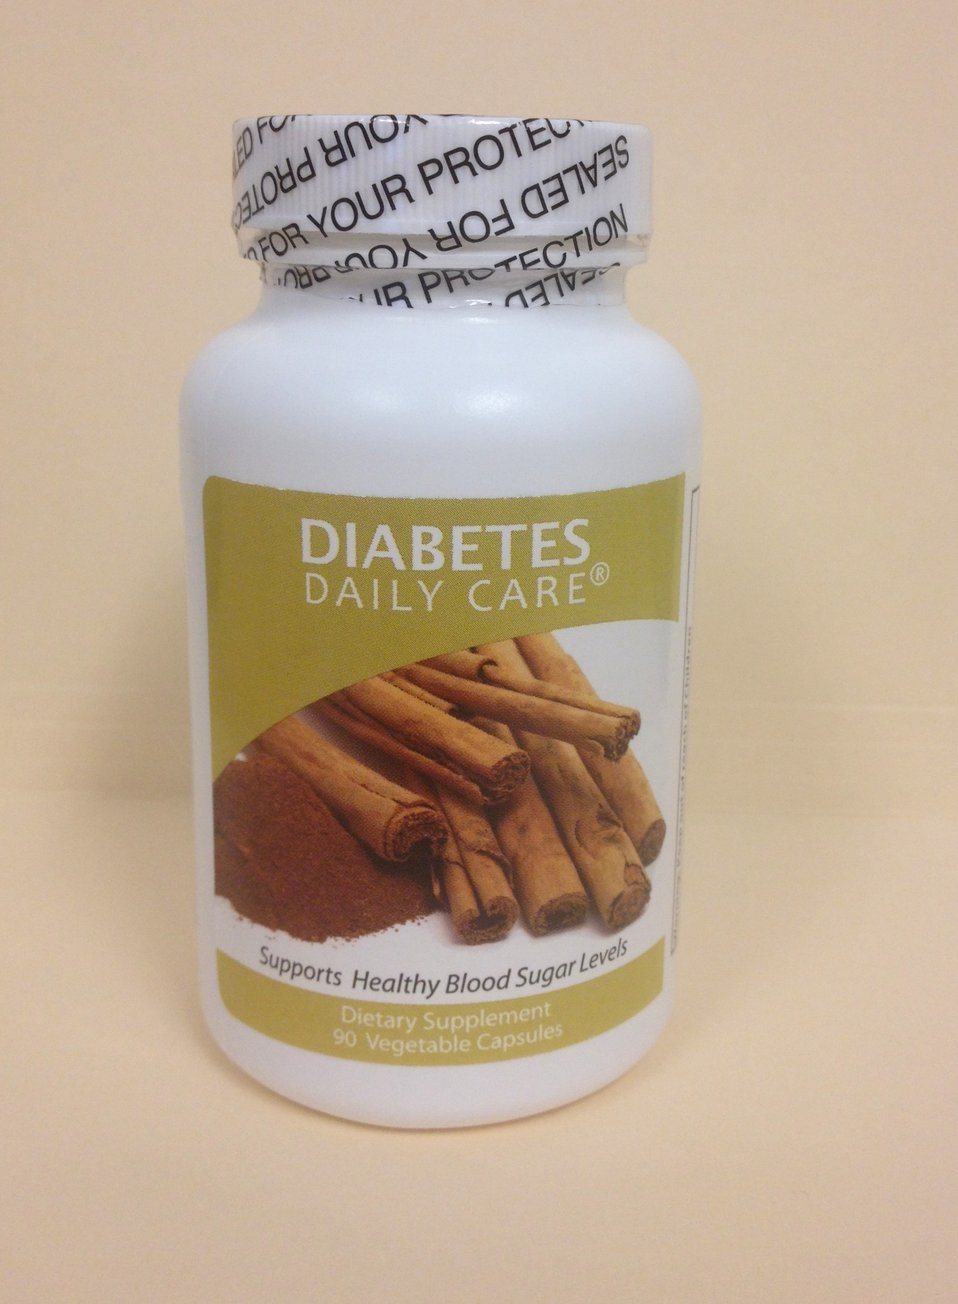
Illegally Sold Diabetes Treatments - Diabetes Daily Care

This product is promoted with unapproved claims to prevent or treat diabetes and/or its complications. FDA warns consumers to avoid unproven and potentially unsafe products sold as treatments for diabetes.